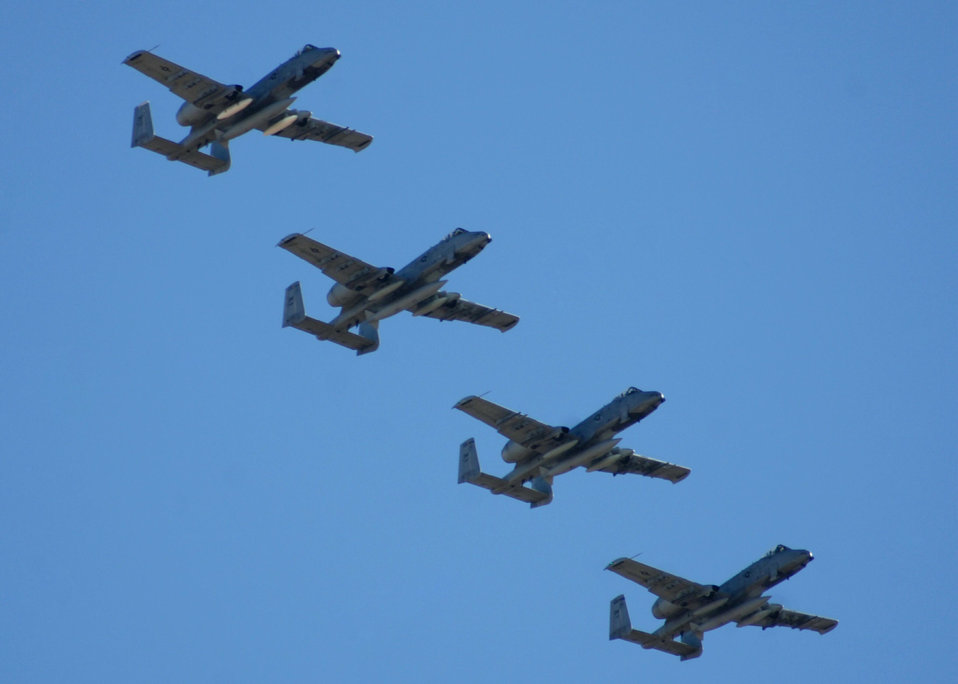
Welcome home

DAVIS-MONTHAN AIR FORCE BASE, Ariz. (AFPN) -- Four A-10 Thunderbolt IIs from the 354th Fighter Squadron return from their deployment Feb. 10. The A-10s were deployed to Bagram Air Base, Afghanistan, in support of Operation Enduring Freedom.